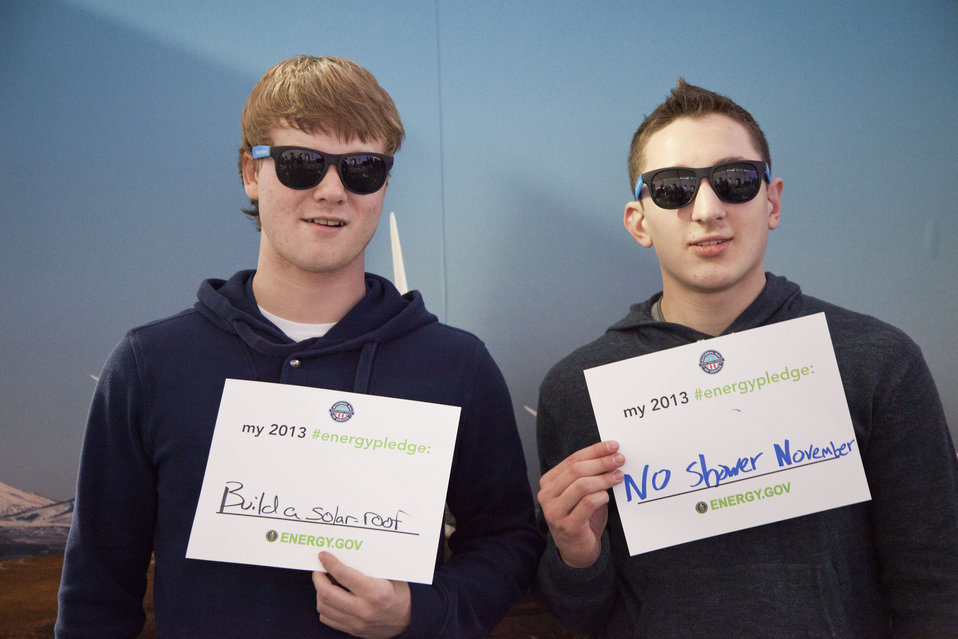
What's your #energypledge?